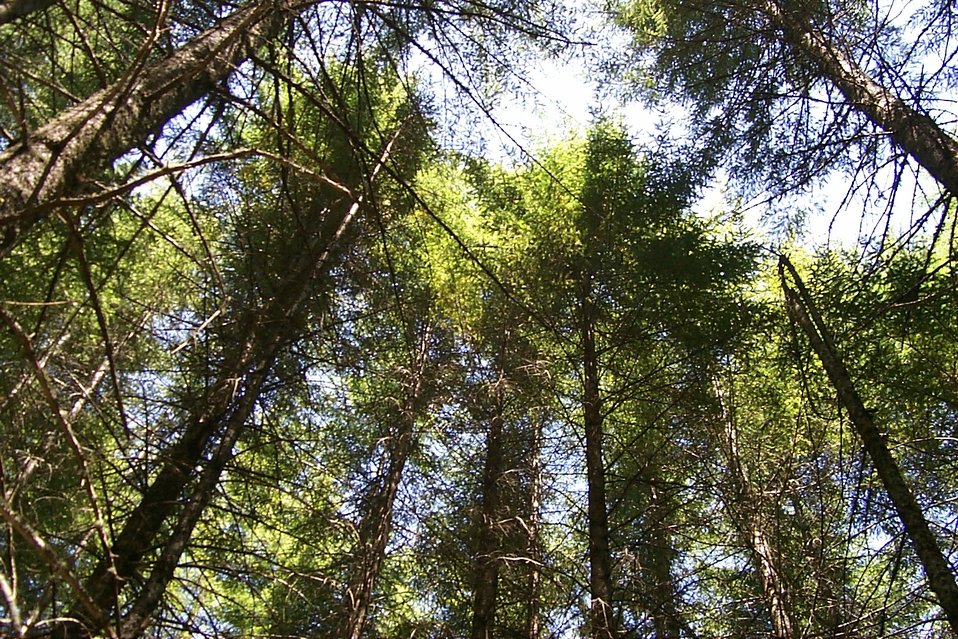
Closed canopy in Camas East Timber Sale.